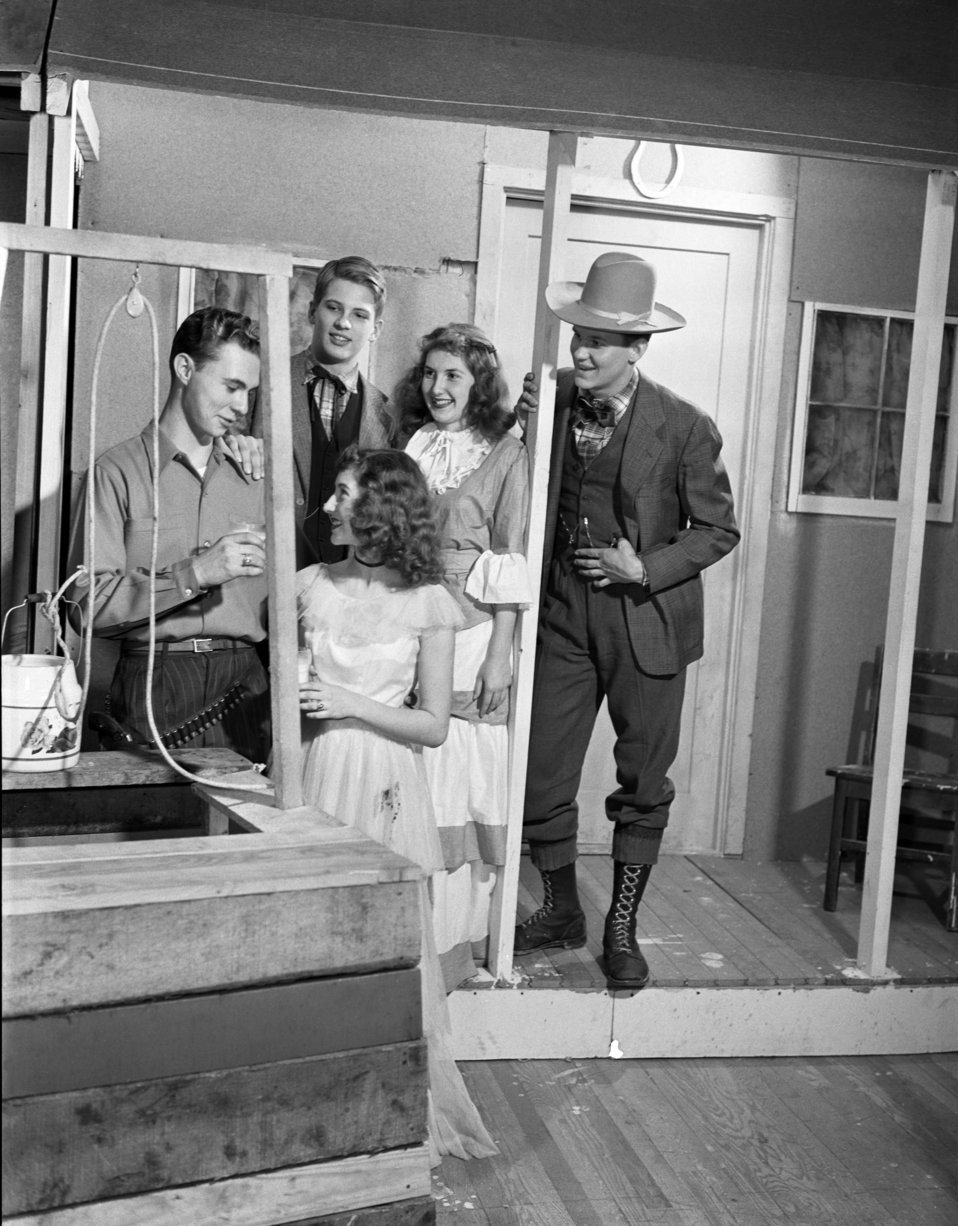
High School Play Oak Ridge 1947

3321-2a DOE photo Ed Westcott 2-28-1947 'Green Grow the Lylac' Oak Ridge Tennessee